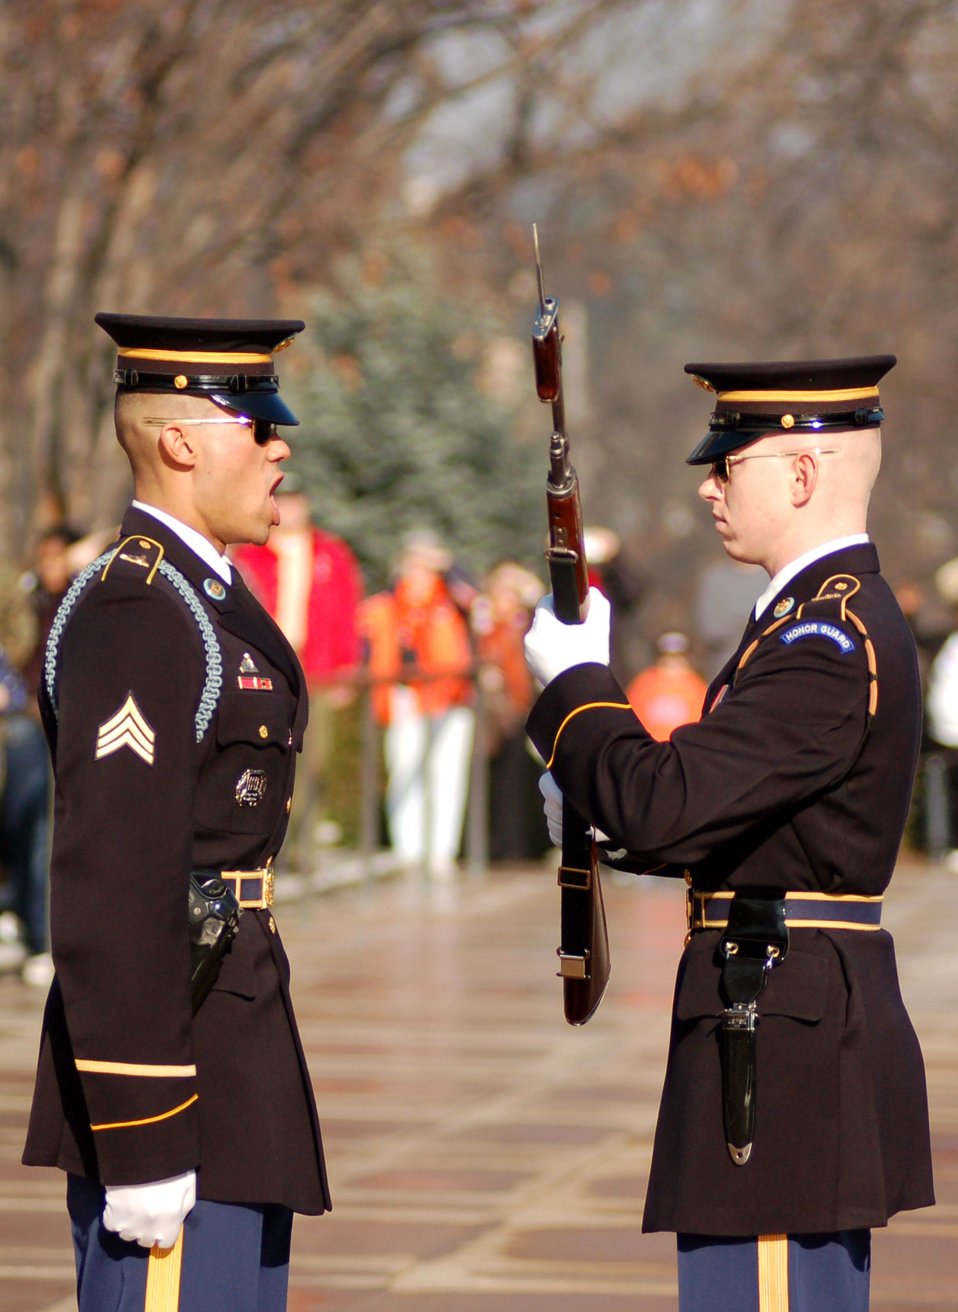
Not forgotten

The Army sergeant in charge of the changing of the guard at the Tomb of the Unkown Soldier at Arlington National Cemetery in Virginia barks a command to a guard who was just relieved from his duties Dec. 14.